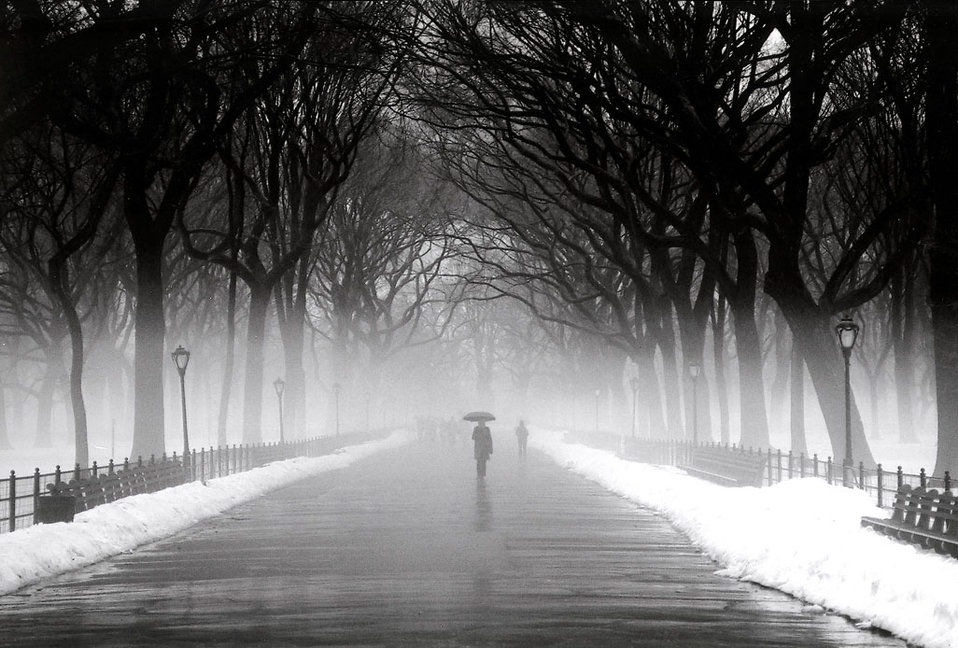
Uploaded by request of Du He Ping.